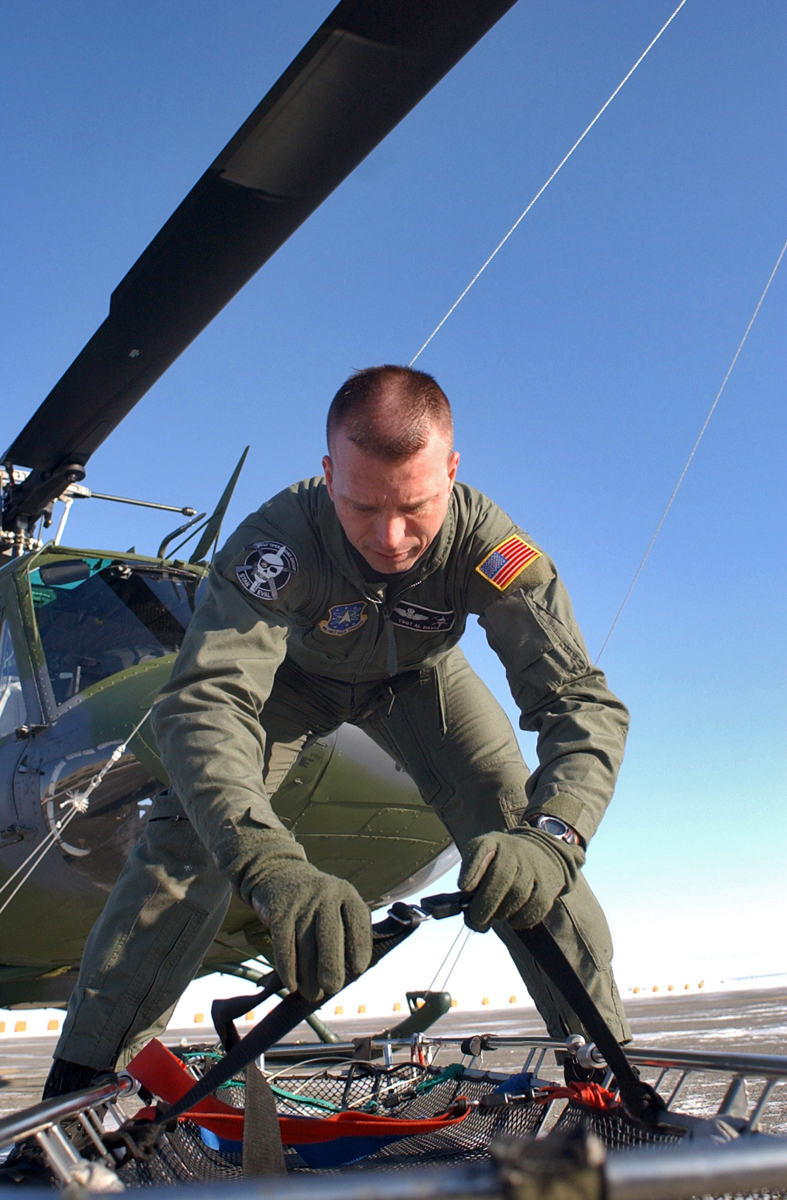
Helicopter crew starts new year with rescue

MALMSTROM AIR FORCE BASE, Mont. -- Tech. Sgt. Al Davis, of the 341st Operations Group, assembles a litter that can be used with a hoist mounted inside a UH-1N Huey.